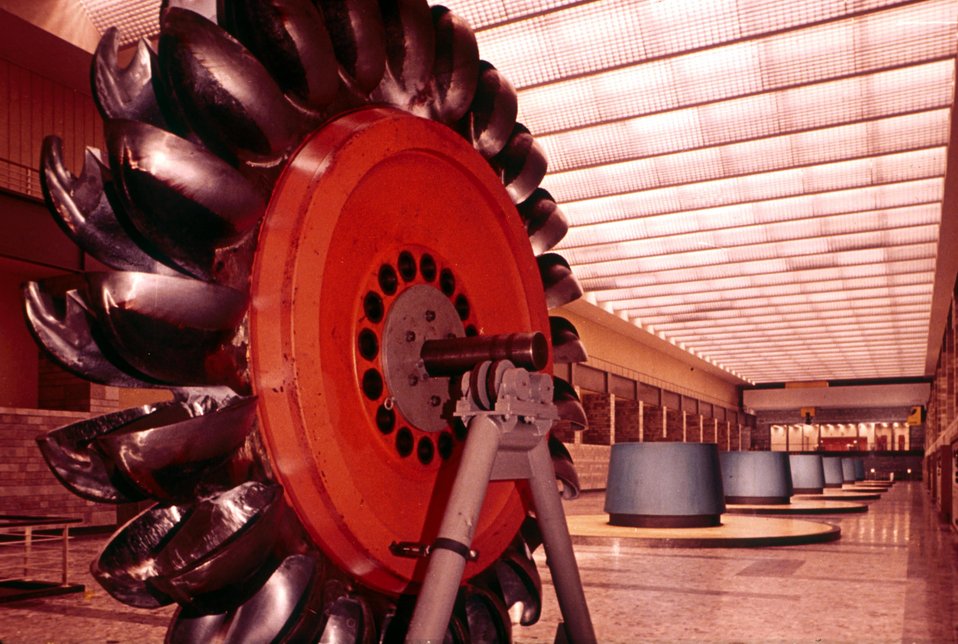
Une turbine hydraulique.